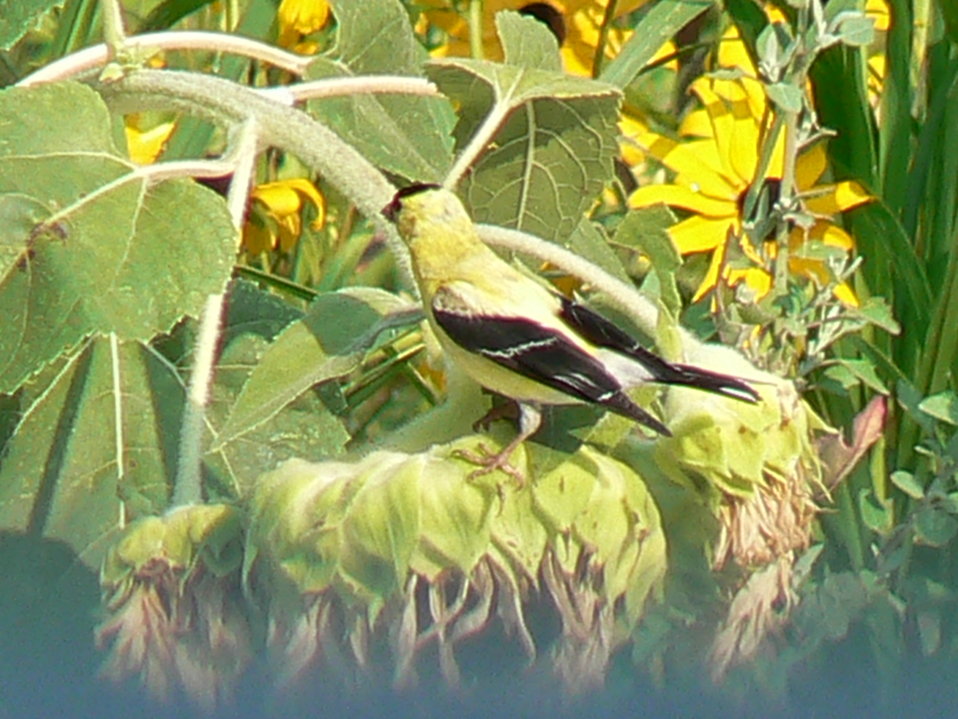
Goldfinch at Cape May National Wildlife Refuge.